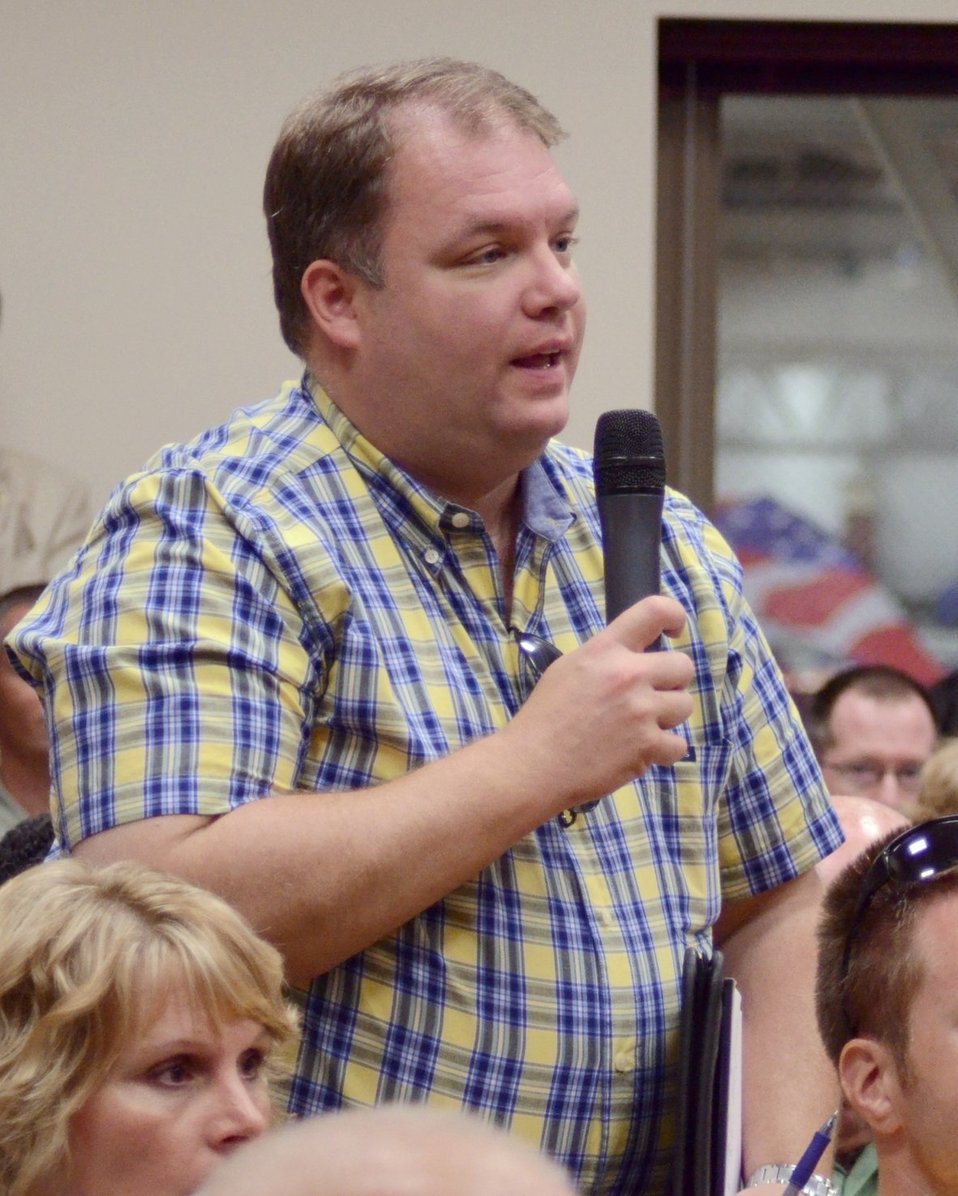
A member of the audience asks Agriculture Secretary Tom Vilsack speaks at the White House Rural Forum at the Wisconsin State Fair, in West Allis, WI, on Thursday, August 4, 2011, to businesses and community leaders, farmers and ranchers to explore ways federal, state and local officials can work together to improve economic conditions and create jobs. The forum is part of a series of White House Rural Roundtables that are being held across the country this summer with senior Administration officials.